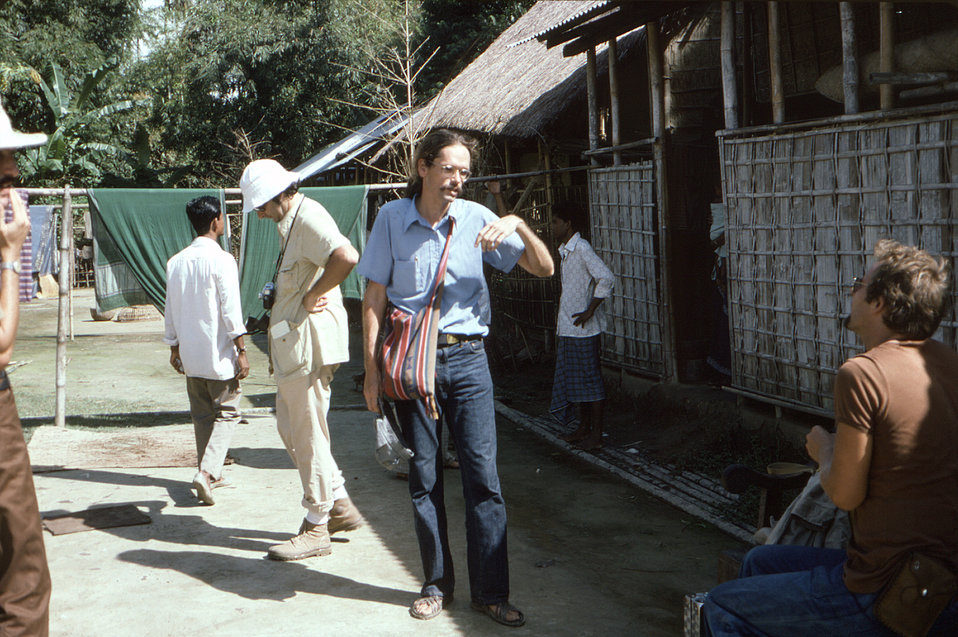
In this 1975 photograph, wearing a white cap, was Dr. Lawrence K. Altman, and shown discussing epidemiologic strategies, was Dr. T. Stephen Jones (blue shirt) from the United States, and seated fellow healthcare practitioner from Switzerland, Dr. Patrice Engelberts. This image was captured while in the north-eastern Bangladesh outbreak District of Sylhet.